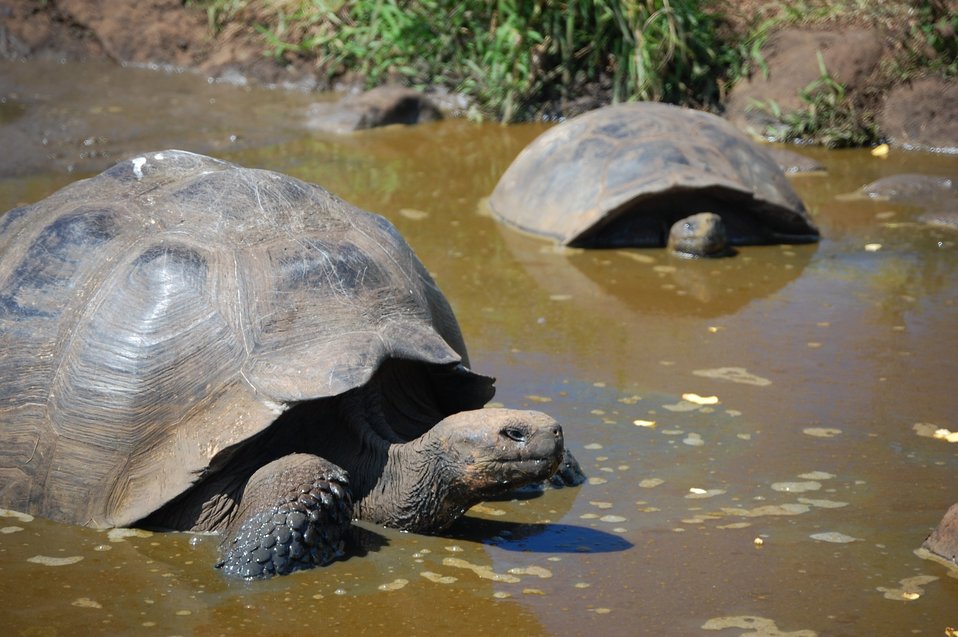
Giant Tortoises.